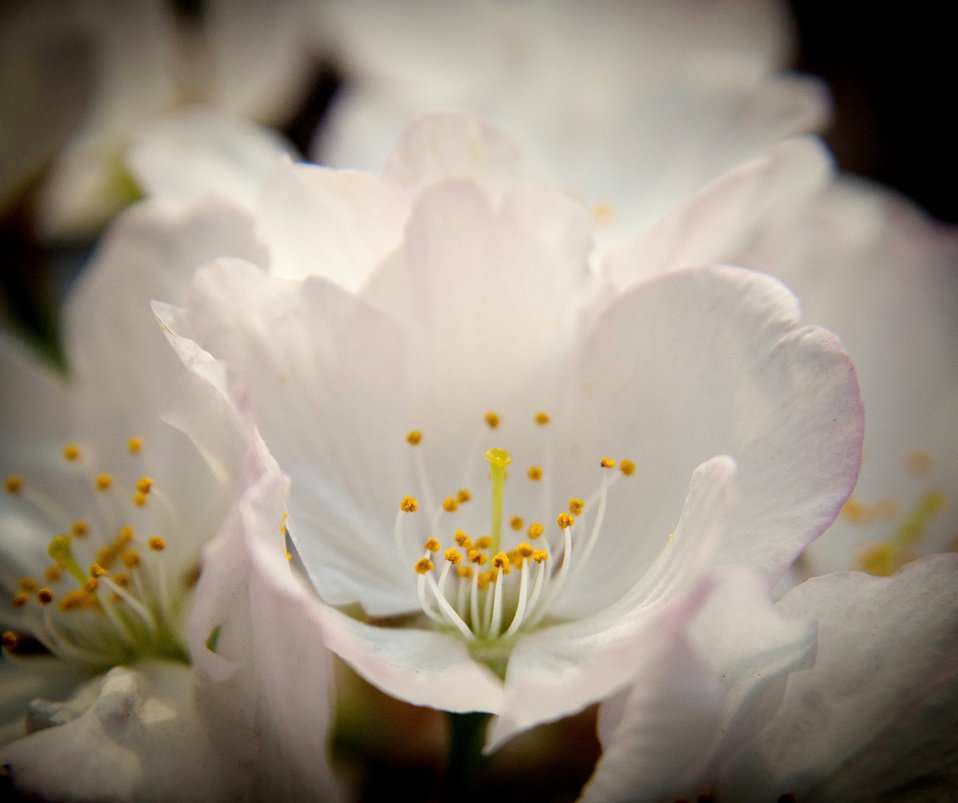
Cherry blossoms at the Tidal Basin in Washington, D.C., on Tuesday, March 20, 2012.